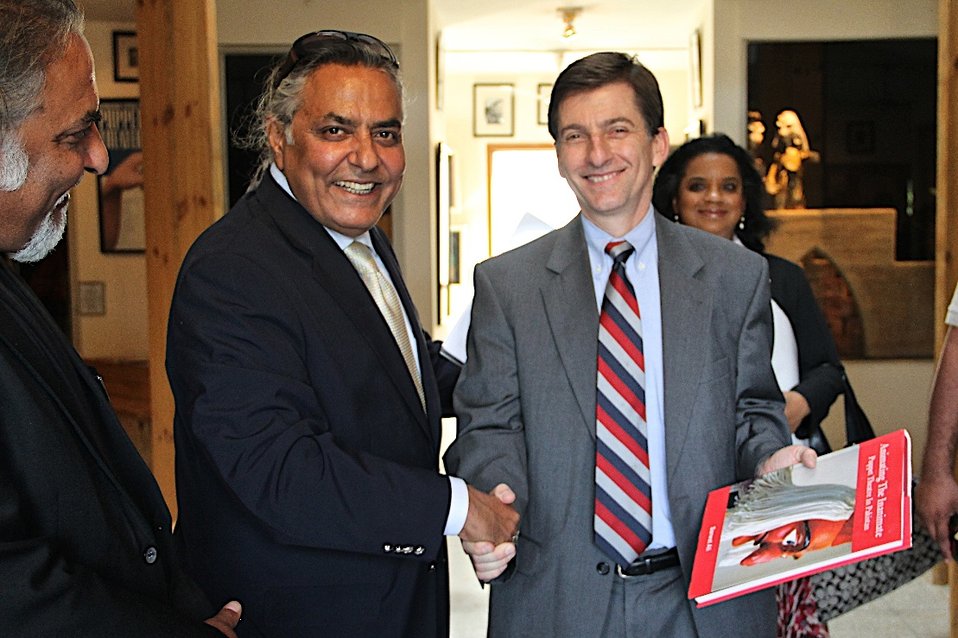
Andy is presented a book during visit to Museum of Puppetry at RPTW